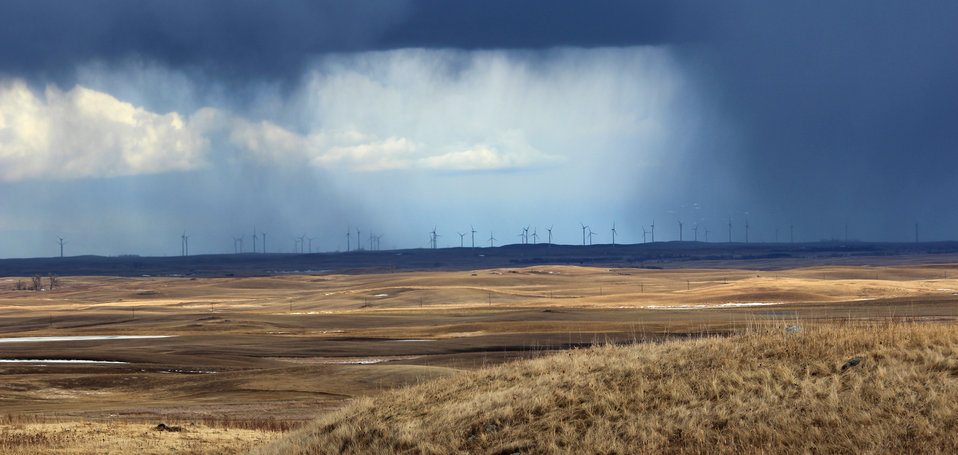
Wind Turbines during a Rainstorm

A view of the Tatanka Wind Farm in Dickey County, North Dakota during an early April shower.